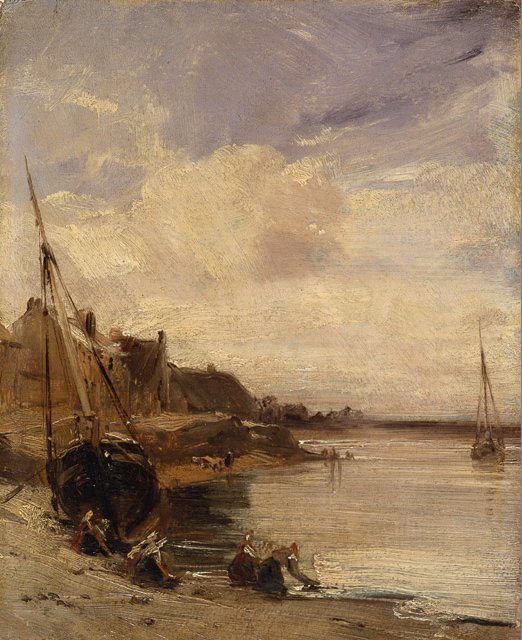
Low Tide at Boulogne by Richard Parkes Bonington, 1824, National Gallery of Victoria